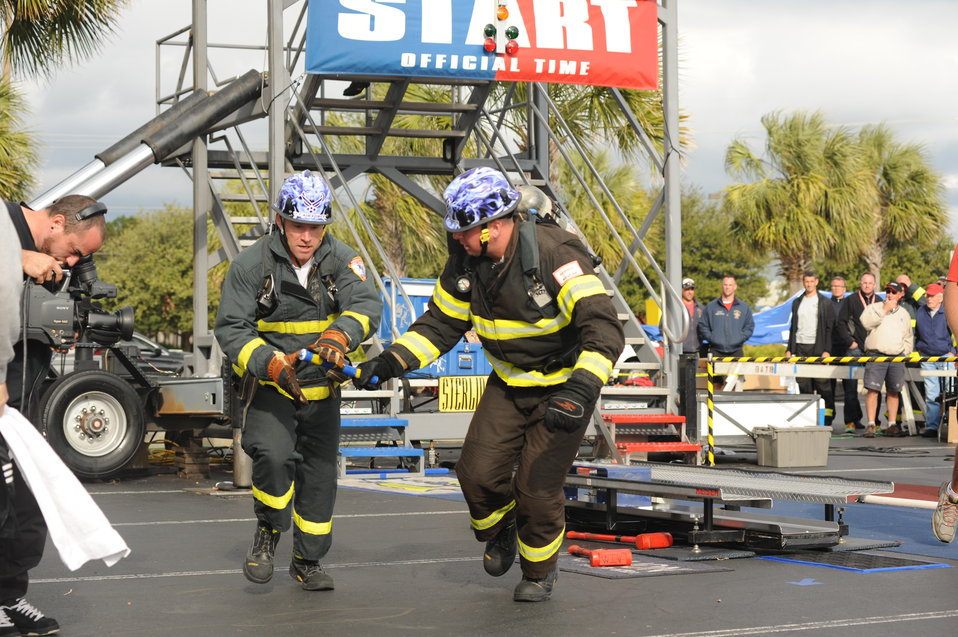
World Firefighter Combat Challenge

Timothy Vanden Haak of the Whiteman Air Force Base Fire Department passes the baton to Mark Belton during a qualifying run during the World Firefighter Combat Challenge XX Nov. 17, 2011, in Myrtle Beach, S.C. The Whiteman AFB, Mo., team advanced to the final competition in the men's relay team category and won the silver medal.